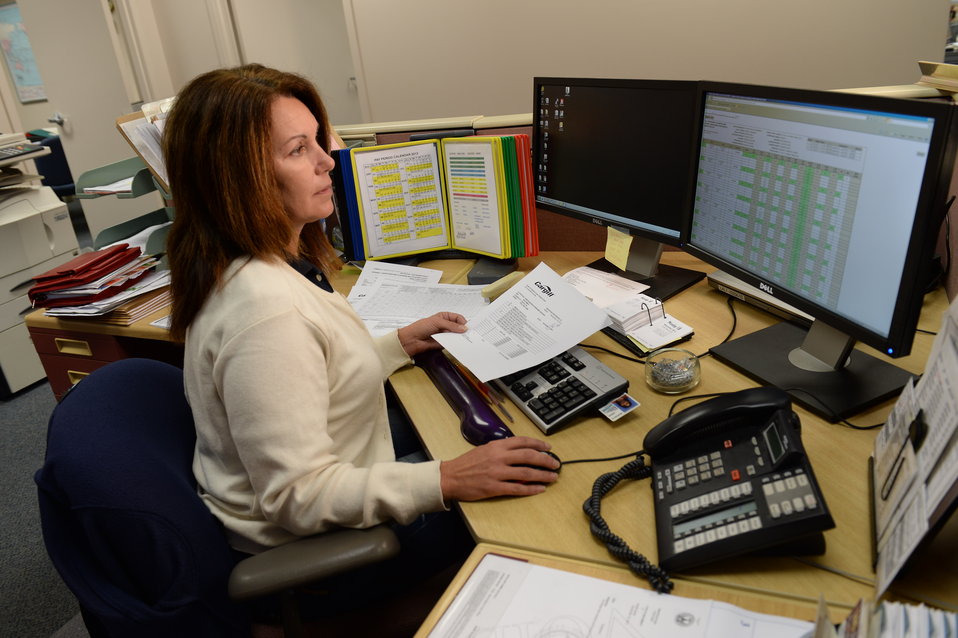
A U.S. Department of Agriculture (USDA) Grain Inspection, Packers and Stockyards Administration (GIPSA) Federal Grain Inspection Service (FGIS) employee processes the grain test results and export clearance forms at the USDA GIPSA FGIS inspection laboratory in New Orleans, LA on Monday, Nov. 18, 2013.